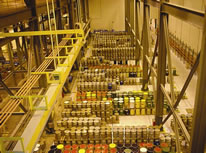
Drum storage area before removal, Portsmouth.